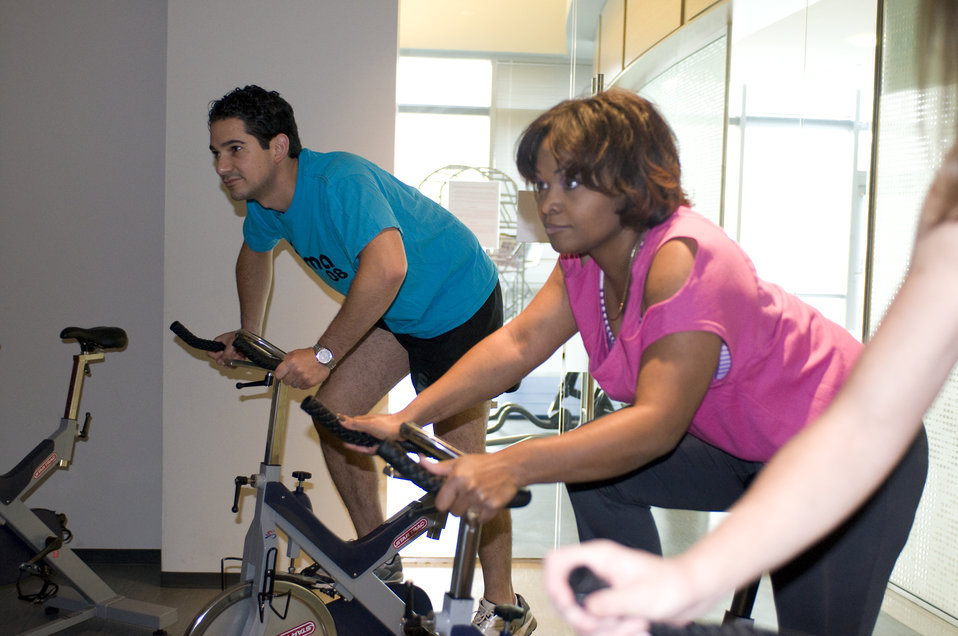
This image depicts a class in session, the purpose of which was to instruct a number of Centers for Disease Control (CDC) employees through an aerobic spinning session, consisting of attendees following the participatory commands of an instructor on whom they were focus to the left, though unseen here in this photograph.